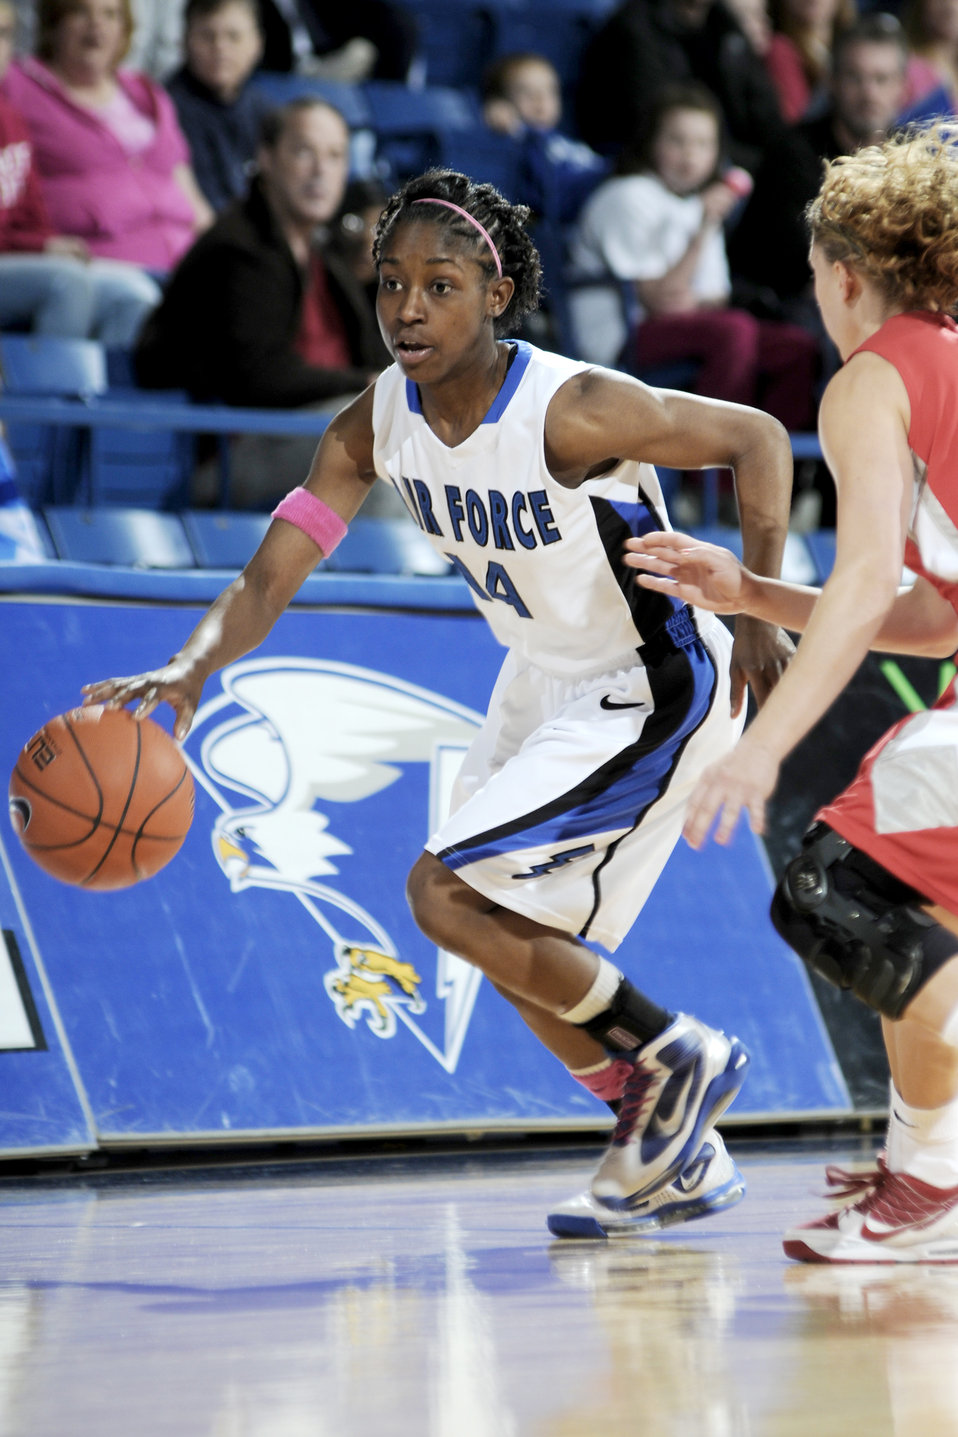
Photo essay: Academy women?s basketball falls to New Mexico

U.S. Air Force Academy freshman guard Desiree Wilson moves the ball up court against the University of New Mexico Feb. 20, 2010, at Clune Arena in Colorado Springs, Colo. The Falcons lost 65-46.